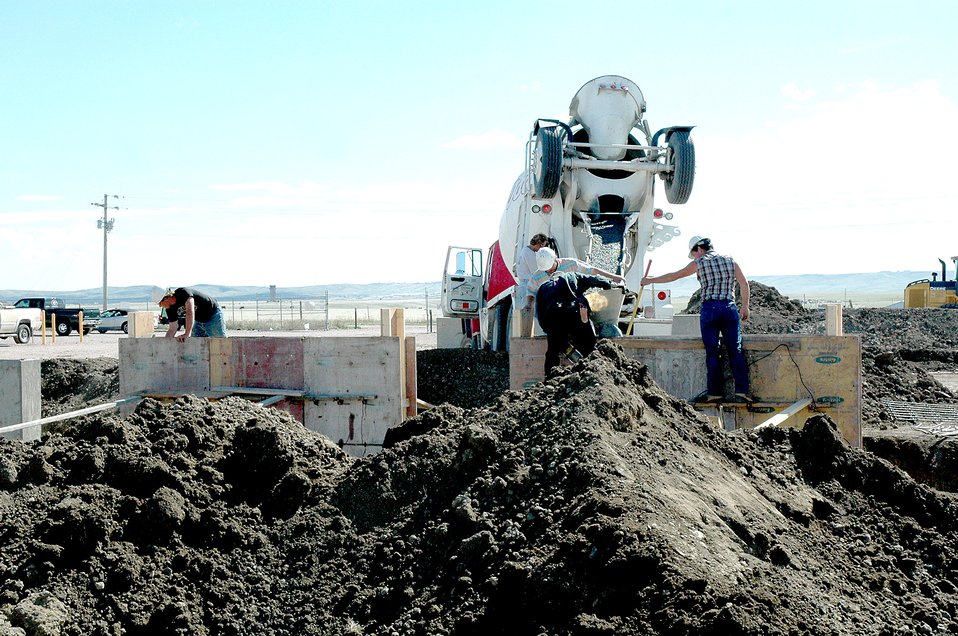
Ellsworth energy team saves money, earns award

Contractors pour concrete at the propane air mix plant in preparation for the installation of four new tanks, each capable of holding 60,000 gallons of propane, Sept. 29 at Ellsworth Air Force Base, S.D. The 28th Civil Engineer Squadron Energy Management Team at Ellsworth AFB received a 2006 Federal Energy and Water Management Award from the U.S. Department of Energy for saving more than $470,000 in total energy costs for fiscal 2005. The plant, completed in December 1998, was part of the first contract partnership between Ellsworth AFB and Montana Dakota Utilities and still saves Ellsworth more than $1 million annually.